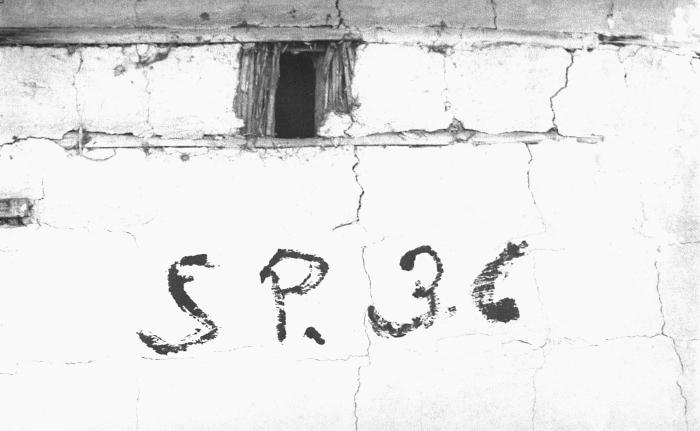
During the smallpox eradication containment program, to track efforts involved in minimizing the spread of any confirmed smallpox cases, each house in each village was marked with a number like the home numbered '36' pictured here. These homes were listed in the 'smallpox containment book' by a community volunteer record keeper. The containment book recorded all of the names of anyone living in, or within a quarter mile of an infected home, and subsequently all those listed were vaccinated against smallpox. Those vaccinated were followed until a 'successful' vaccination was observed. It was due in large part, to the diligence of local resident volunteers in tracking this severe viral disease, and applying a strict adherence to epidemiologic principles, that such a scourge was brought under control.